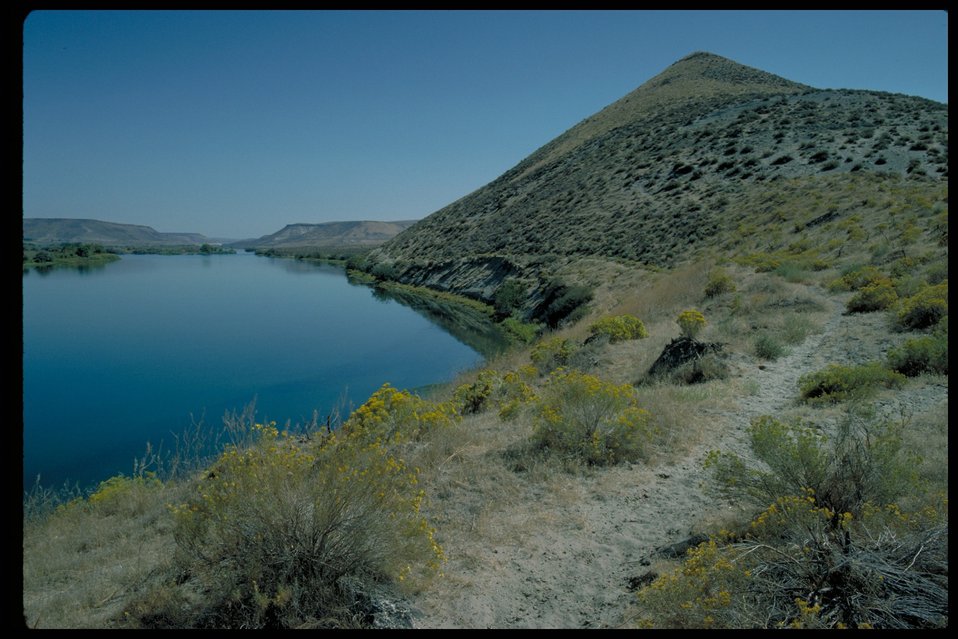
Oregon Trail South of Hammett Lower Snake River District